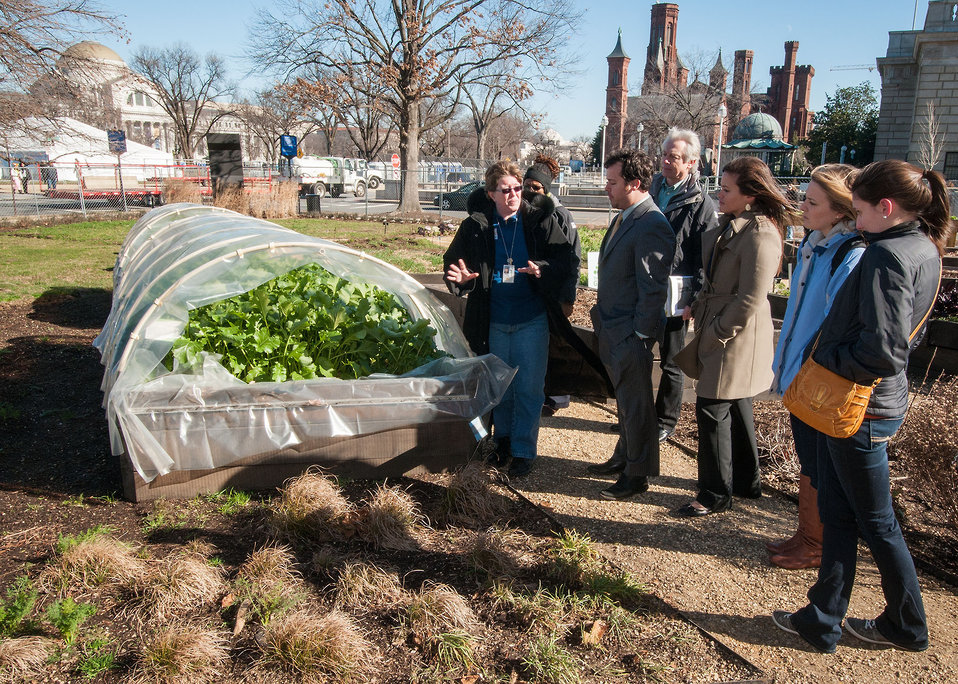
Michelle Bouchard led a tour of the U.S. Department of Agriculture (USDA) People’s Garden during a USDA Open House on the National Mall, in Washington, D.C., on Friday, Jan. 18, 2013. The Open House was an opportunity to learn more about USDA’s role in agriculture, local and regional food systems, natural resource conservation, nutrition, research and rural development.